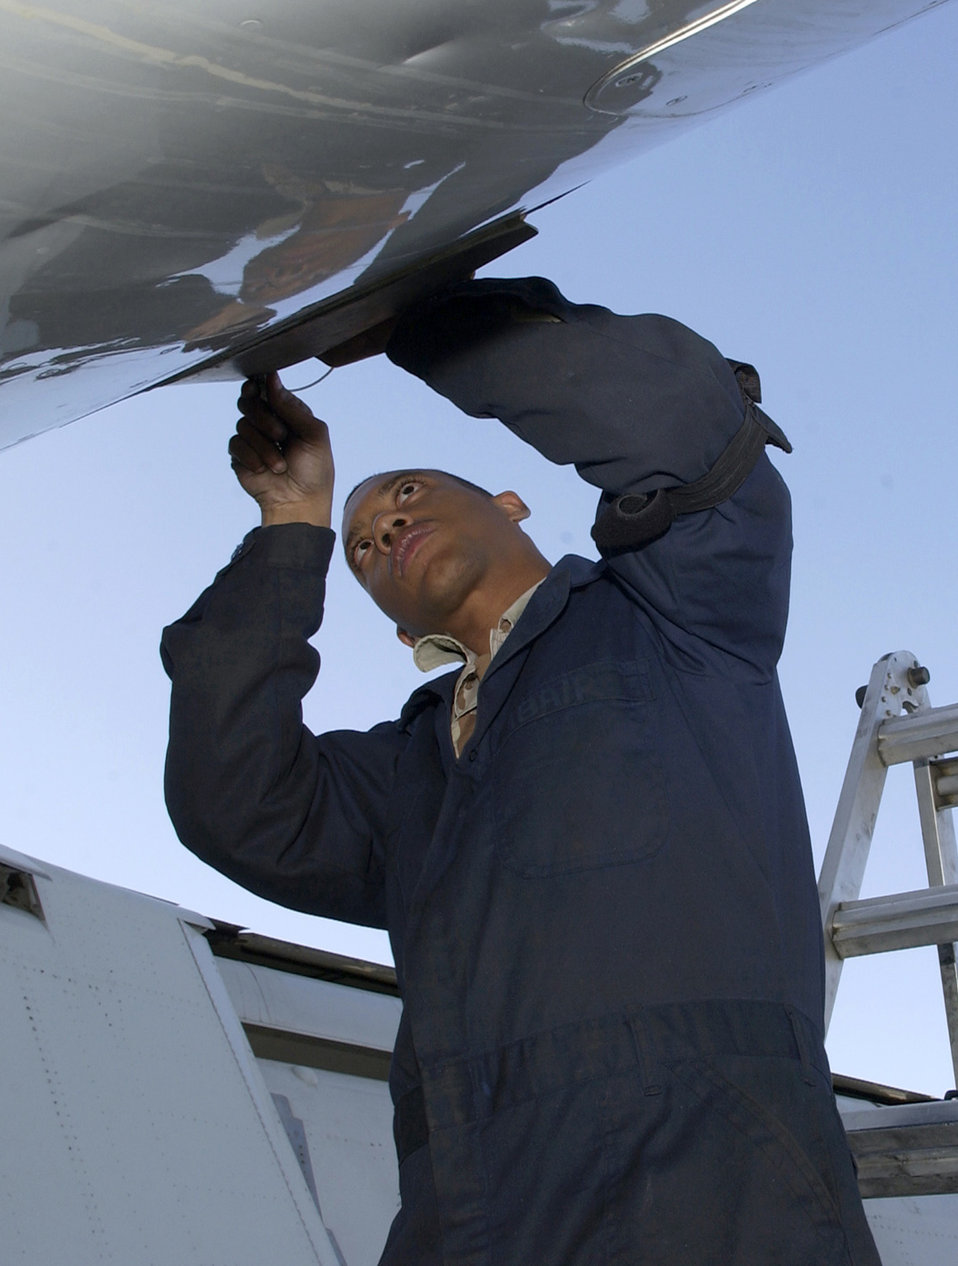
Everything is good to go

SOUTHWEST ASIA -- Staff Sgt. Tony Abair works on an E-8C Joint STARS aircraft. He is a jet propulsion mechanic with the 379th Air Expeditionary Wing at a forward-deployed location here from Robins Air Force Base, Ga.